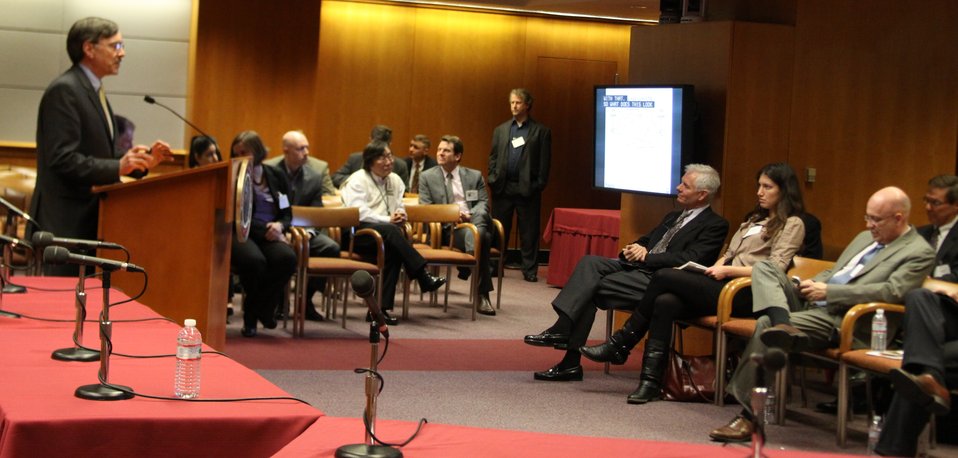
March 27, 2013 Gigabit City Challenge: Broadband Networks Workshop